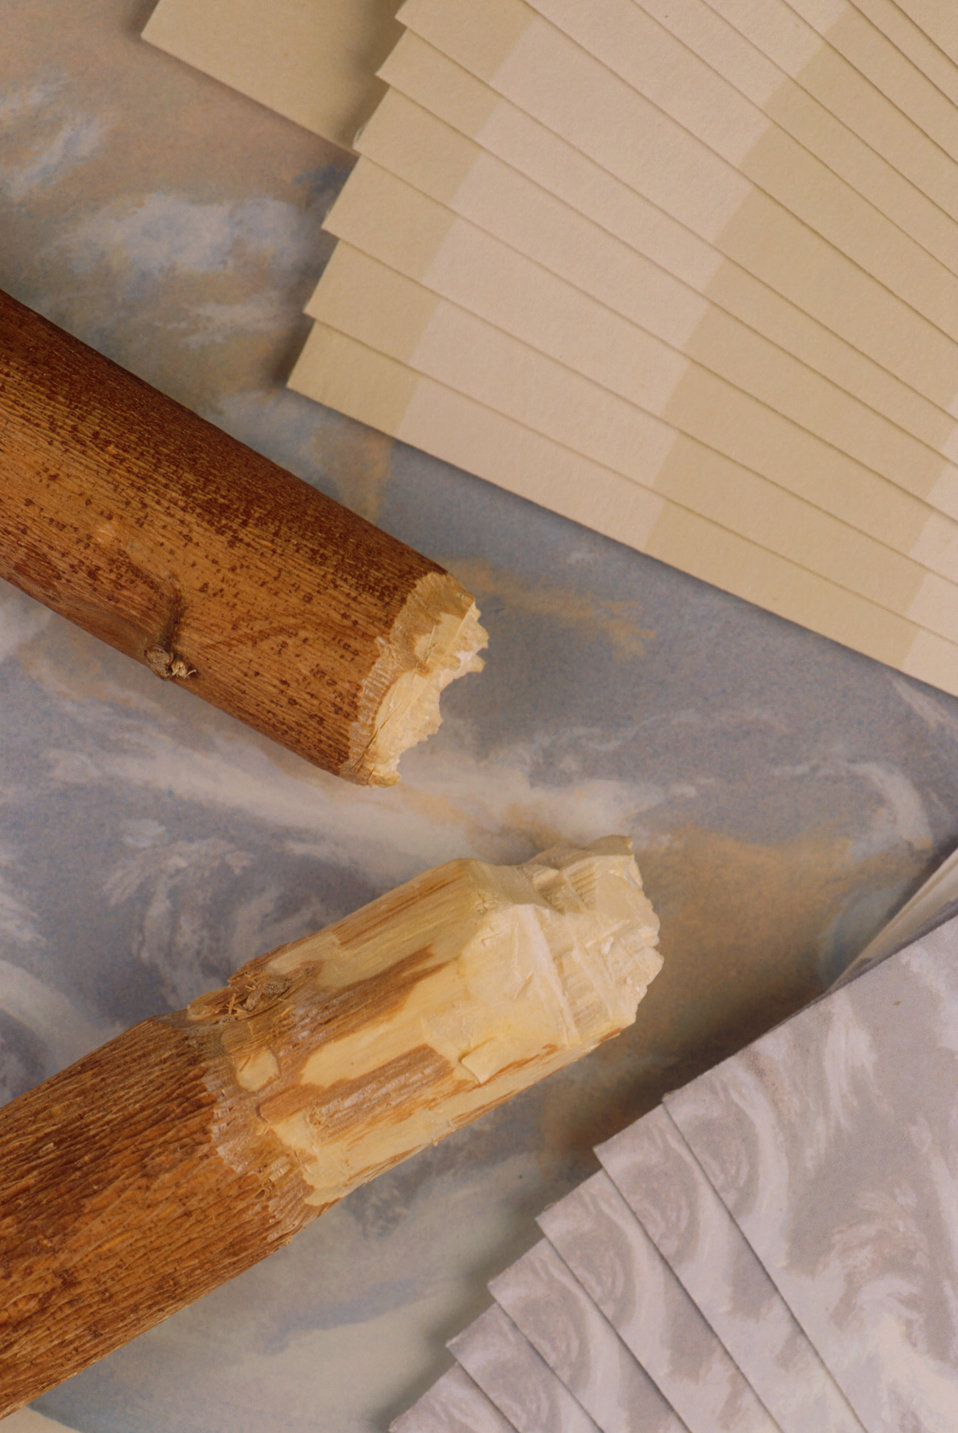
Fifty-five percent of dried kenaf stalks will be used to make paper. Waste products from the process can be made into fertilizer and feed binder.